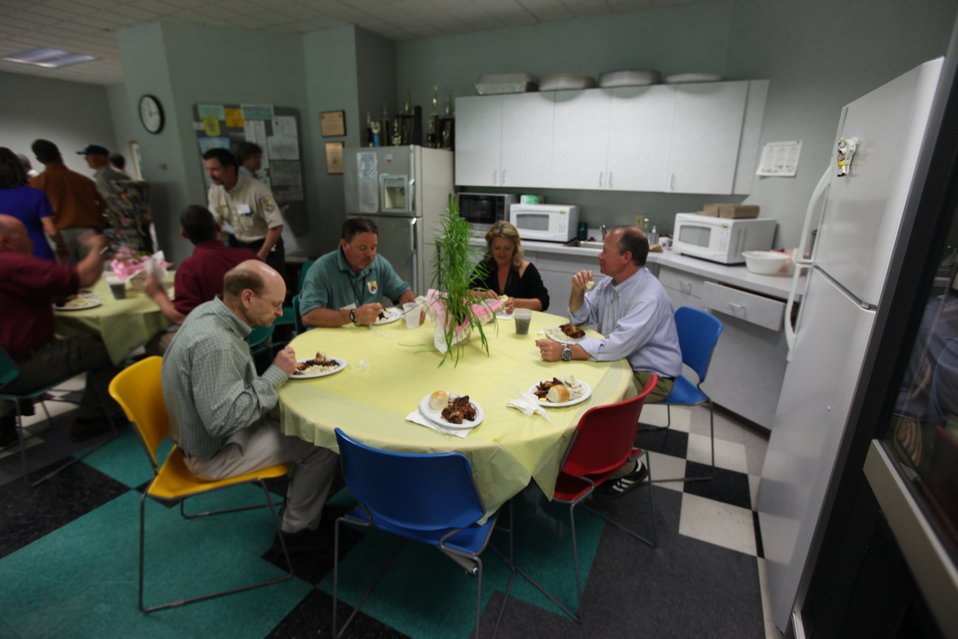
Northeast Region Employee Appreciation Awards

Award winners enjoying lunch before the awards